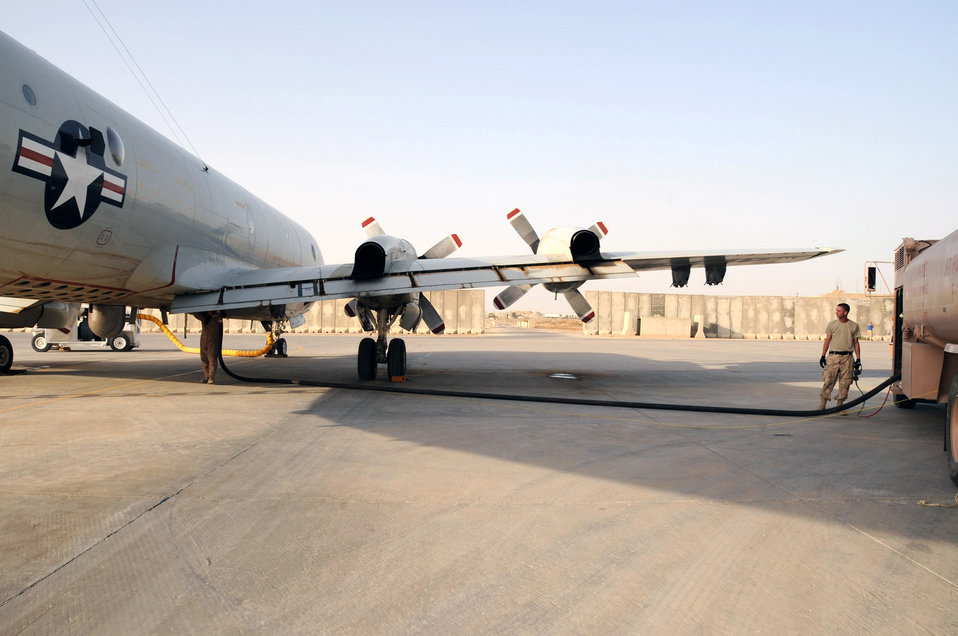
Refueling the P-3

Airman 1st Class Christopher Carbon refuels a Navy P-3 Orion April 23 at Ali Base, Iraq. Airman Carbon, a 407th Expeditionary Logistics Readiness Squadron refueling unit operator, has pumped more than 1.2 million gallons of gasoline since arriving at Ali Base in January. The Petroleum, Oil and Lubricants section refuels Navy P-3s, MQ-1 Predators, helicopters and various cargo aircraft to support the mission in Southwest Asia. Airman Carbon is deployed from Ramstein Air Base, Germany.